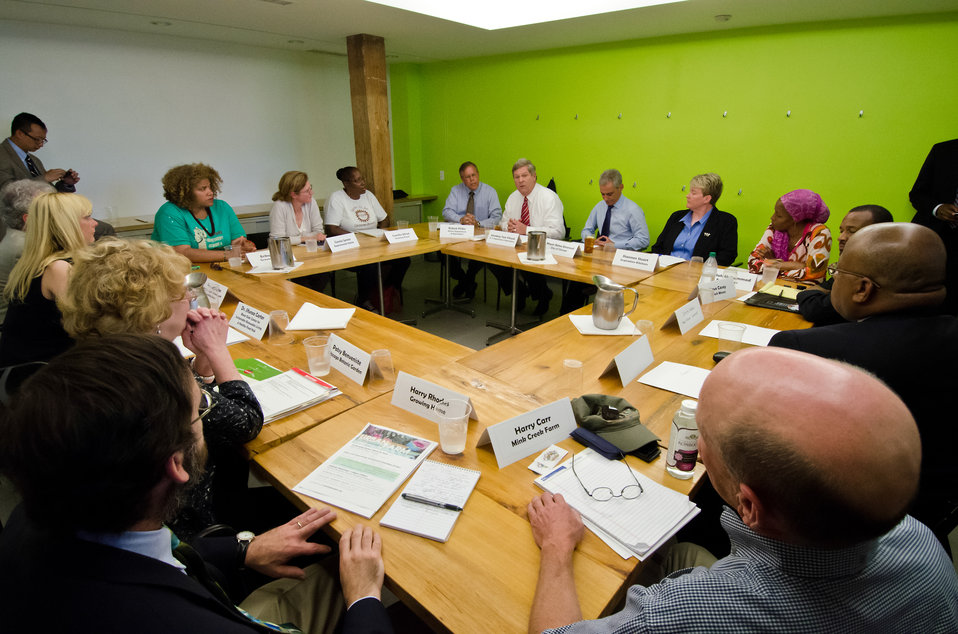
Agriculture Secretary Tom Vilsack and Chicago Mayor Rahm Emanuel held a round-table discussion at Inspiration Kitchens a social enterprise restaurant in Chicago, Illinois, on Friday June 8, 2012 after touring a Fresh Moves Mobile Market Bus, a renovated Chicago Transit Authority Bus that delivers fresh, affordable fruits and vegetables to two neighborhoods with limited access to fresh produce. The food at Inspiration Kitchens is prepared and served by students and graduates in a food service training program. Inspiration Kitchens offers career services, employment preparation training, tuition subsidies, employer outreach, and job placement and retention services throughout the Chicago area.